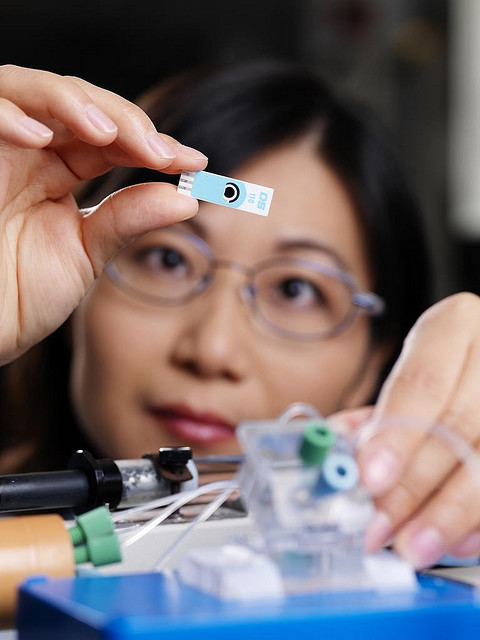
At Pacific Northwest National Laboratory, researchers are conducting cutting edge work to build highly efficient, noninvasive sensors based on carbon nanotube technologies.
Researchers are building a sensor based on enzymes that self-assemble layer by layer onto tiny hallow carbon tubes. When the sensor encounters organophosphates, the active agent in certain insecticides and chemical warfare agents, the enzymes slow down. The reduced activity is transmitted as an electrochemical signal through the carbon nanotubes to the attached electrode. The resulting measurements can show the concentration of organophosphates in a person's saliva, a city's water supply, or other contaminated waters.